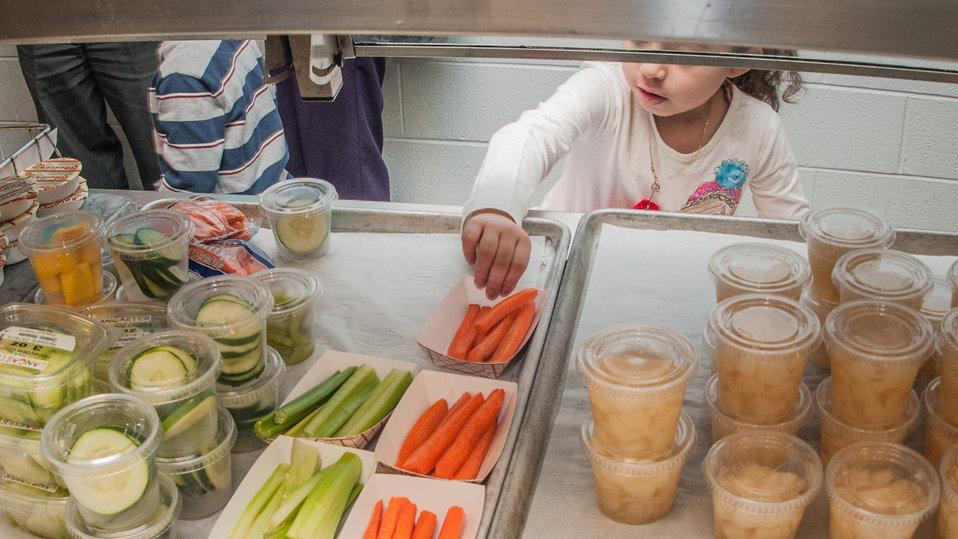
A Harmony Hills Elementary School student picks one of her two side selections as her class picks up their lunches and head to their tables, in Silver Spring, MD, on Thursday, March 7, 2013. Harmony Hills’ 640 students spend about 25 minutes in the cafeteria receiving their food and eating. The process requires a choreographed procession of children moving to and from the cafeteria. Earlier in the day, the students select their menu items and know what to choose when in line. Today’s entrée items are reduced fat and reduced salt whole-wheat pizza, spicy chicken patty, salad and peanut butter and jelly sandwich. Department of Agriculture (USDA) Food and Nutrition Service (FNS) administers several programs that provide healthy food to children including the National School Lunch Program, the School Breakfast Program, the Child and Adult Care Food Program, the Summer Food Service Program, the Fresh Fruit and Vegetable Program, and the Special Milk Program. Administered by State agencies, each of these programs helps fight hunger and obesity by reimbursing organizations such as schools, childcare centers, and after-school programs for providing healthy meals to children. Harmony Hills participates in the Maryland Meals for Achievement (MMFA), In-Classroom breakfast program, the fresh fruit and vegetable program, and the summer food service program. Learn more by visiting www.fns.usda.gov and twitter @USDANutrition.